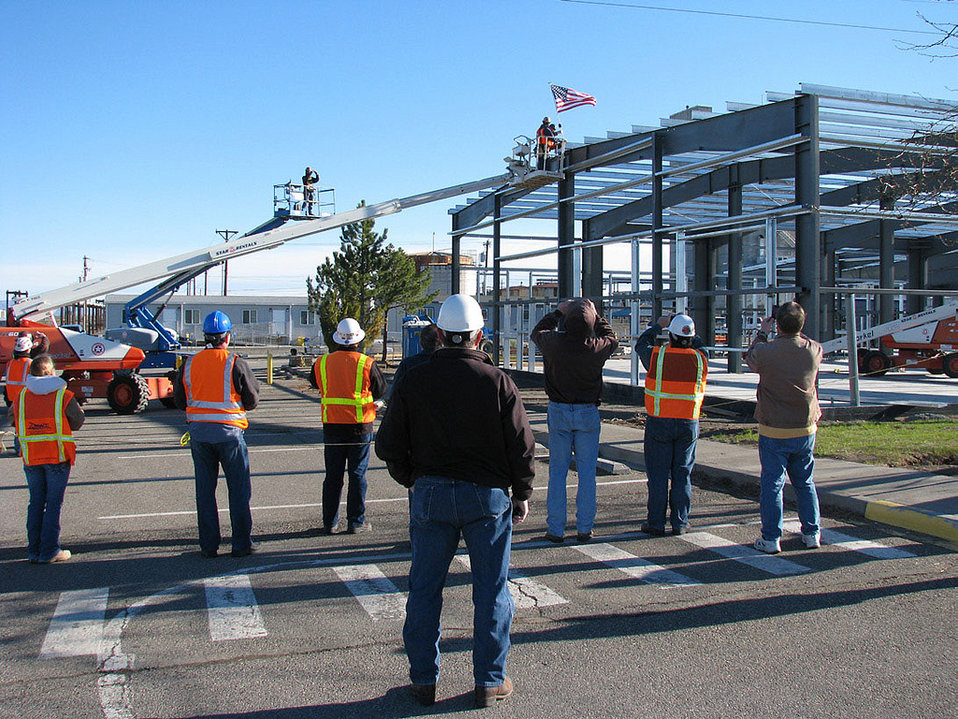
Workers raise the U.S. flag at the new 222-S facility.

The building replaces aging facilities and is designed to be energy-efficient. Construction will be complete in mid-August and the building is designed to last the duration of the Tank Farms mission to retrieve and treat more than 56 million gallons of radioactive waste.